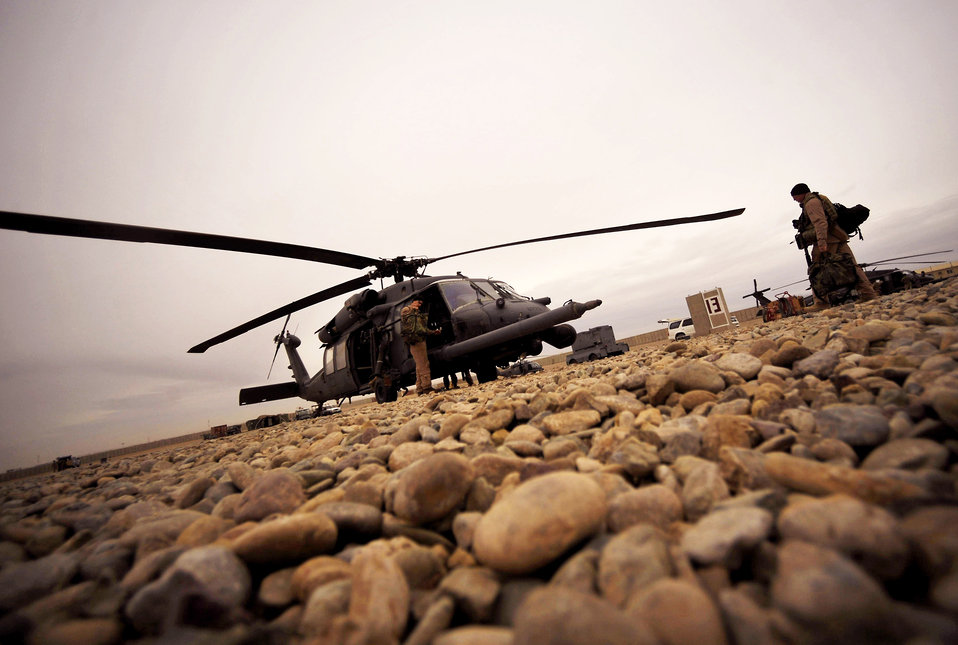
Airmen load their HH-60 Pave Hawk with gear

U.S. Air Force Airmen from the 66th Expeditionary Rescue Squadron deployed to Camp Bastion, Afghanistan, load their HH-60 Pave Hawk with gear, Dec. 8, 2009. This ensures the team can respond in a moment's notice to rescue a patient and have everything needed to treat them.